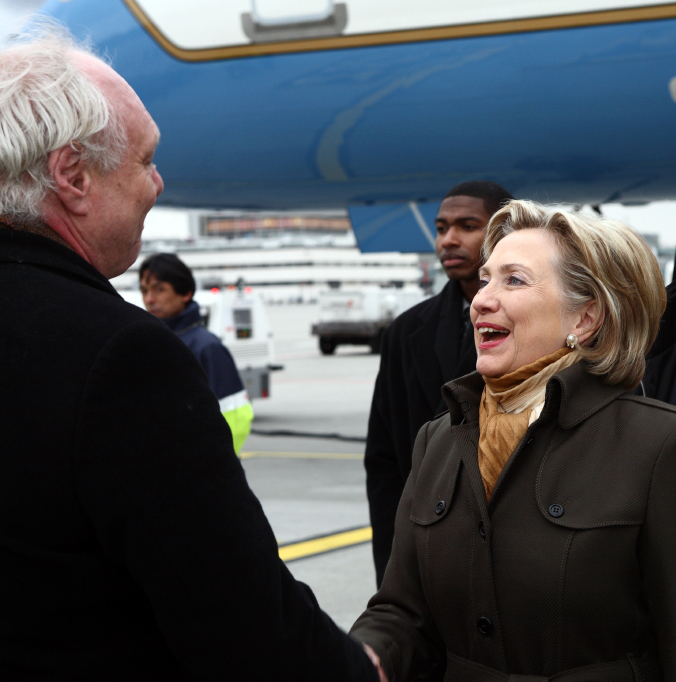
Arrival in Geneva, Switzerland

U.S. Secretary of State Hillary Rodham Clinton arrives in Geneva, Switzerland March 6, 2009.